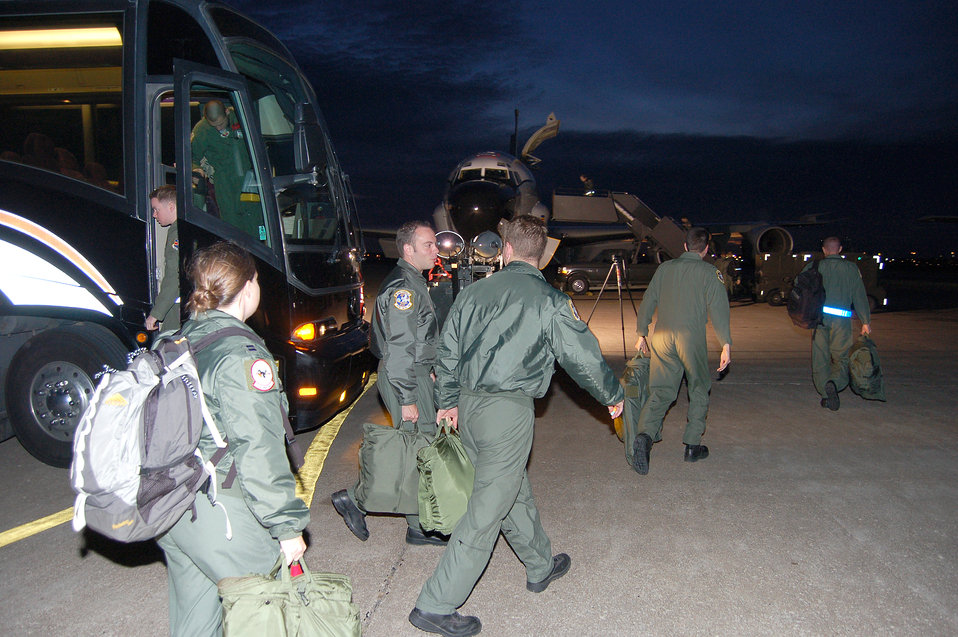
55th Wing fulfills mission tasks from borrowed airfield

Aircrew members retrieve gear from their bus before boarding an RC-135V/W Rivet Joint reconnaissance aircraft for a training mission at Lincoln Air Park in Lincoln, Neb., Sept. 29. The 55th Wing at Offutt Air Force Base, Neb., temporarily moved base aircraft and support units to the air park while the base's runway is under repair.